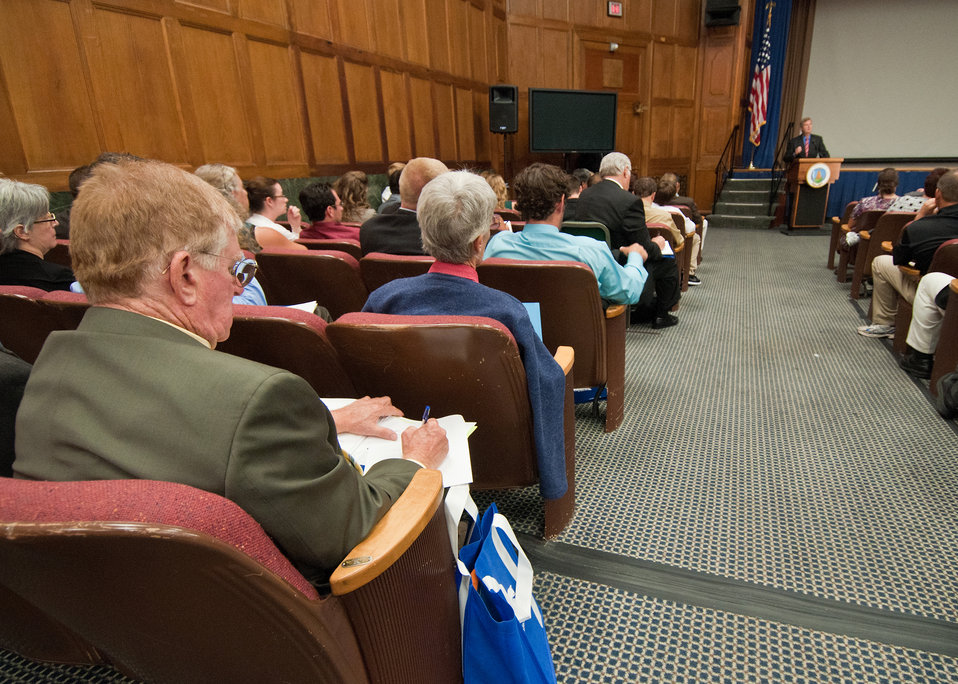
Bruce Howden from Sheffield, MA takes notes during Agriculture Secretary Tom Vilsack’s remarks to the National Farmer’s Union during their annual Fall Legislative Fly-In at the U.S. Department of Agriculture in Washington, D. C. on Monday, Sept. 12, 2011.